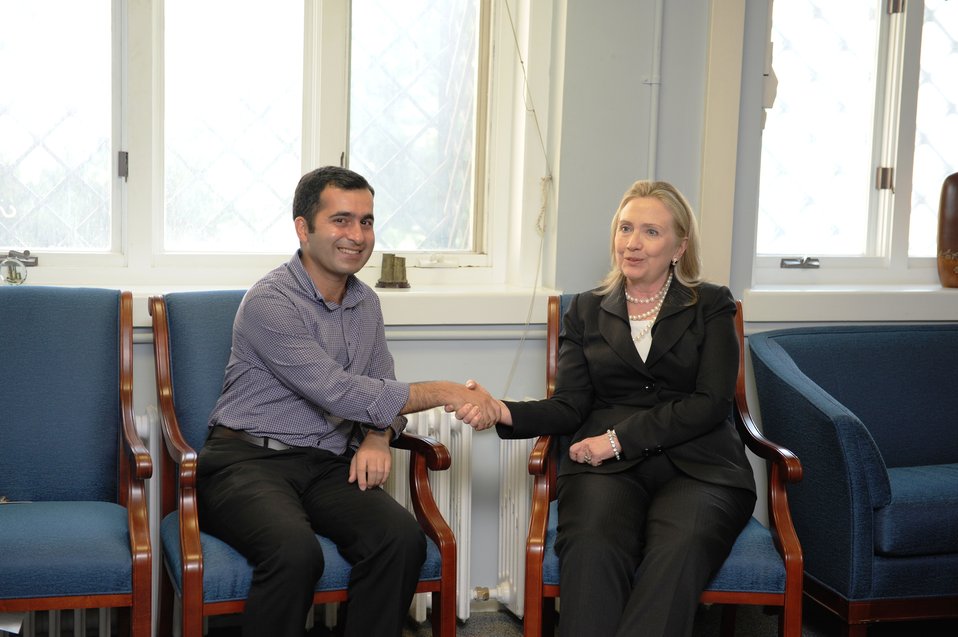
Secretary Clinton Meets With Bakhtiyar Hajiyev

U.S. Secretary of State Hillary Rodham Clinton meets with Bakhtiyar Hajiyev in Baku, Azerbaijan, on June 6, 2012.